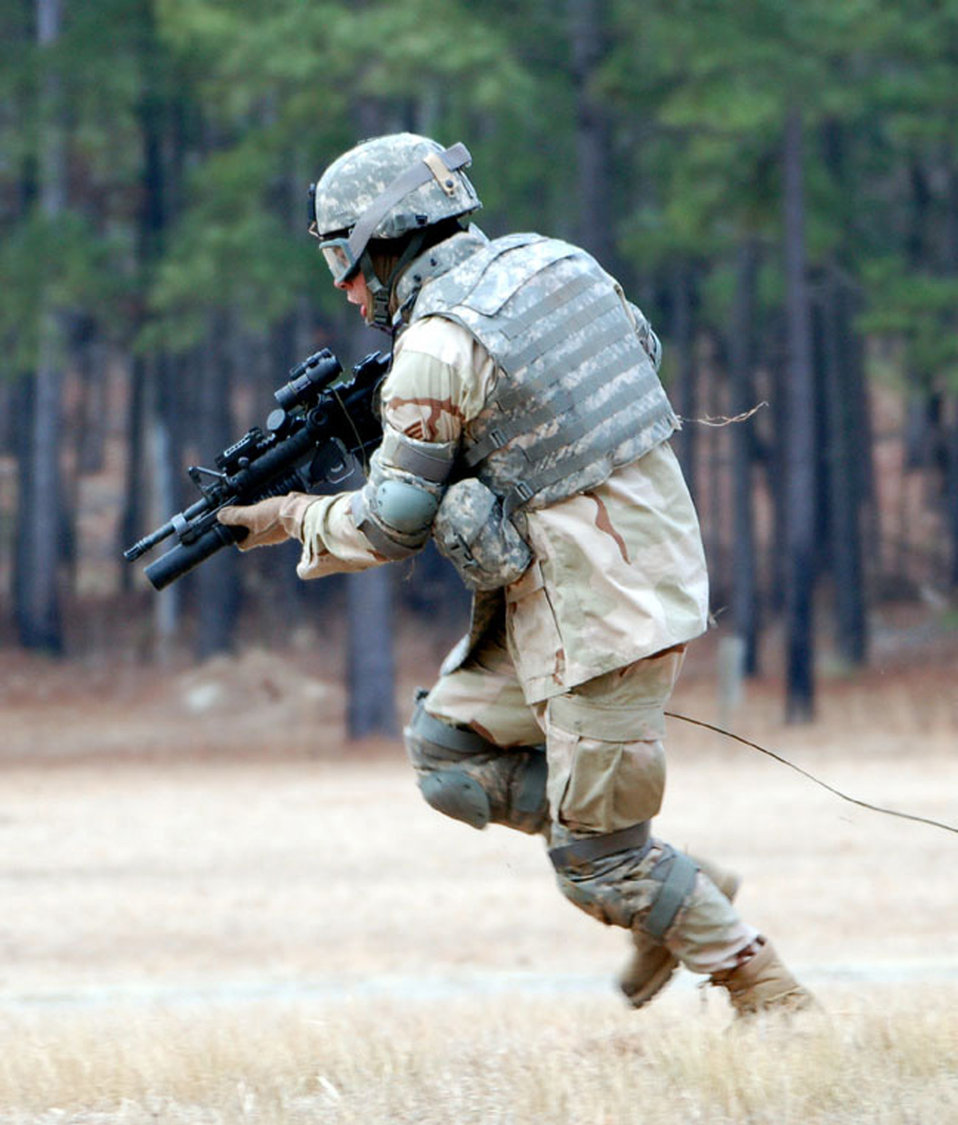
New fitness requirements for deploying Airmen

An Airman advances toward a hill during a live-fire exercise as part of Combat Skills Training for provincial reconstruction team members. In the exercise, teams of Airmen and Soldiers make their way up a hill while firing at targets using live ammunition. Airmen preparing for joint expeditionary taskings must be prepared for physically strenuous activities during their Army-led training courses.